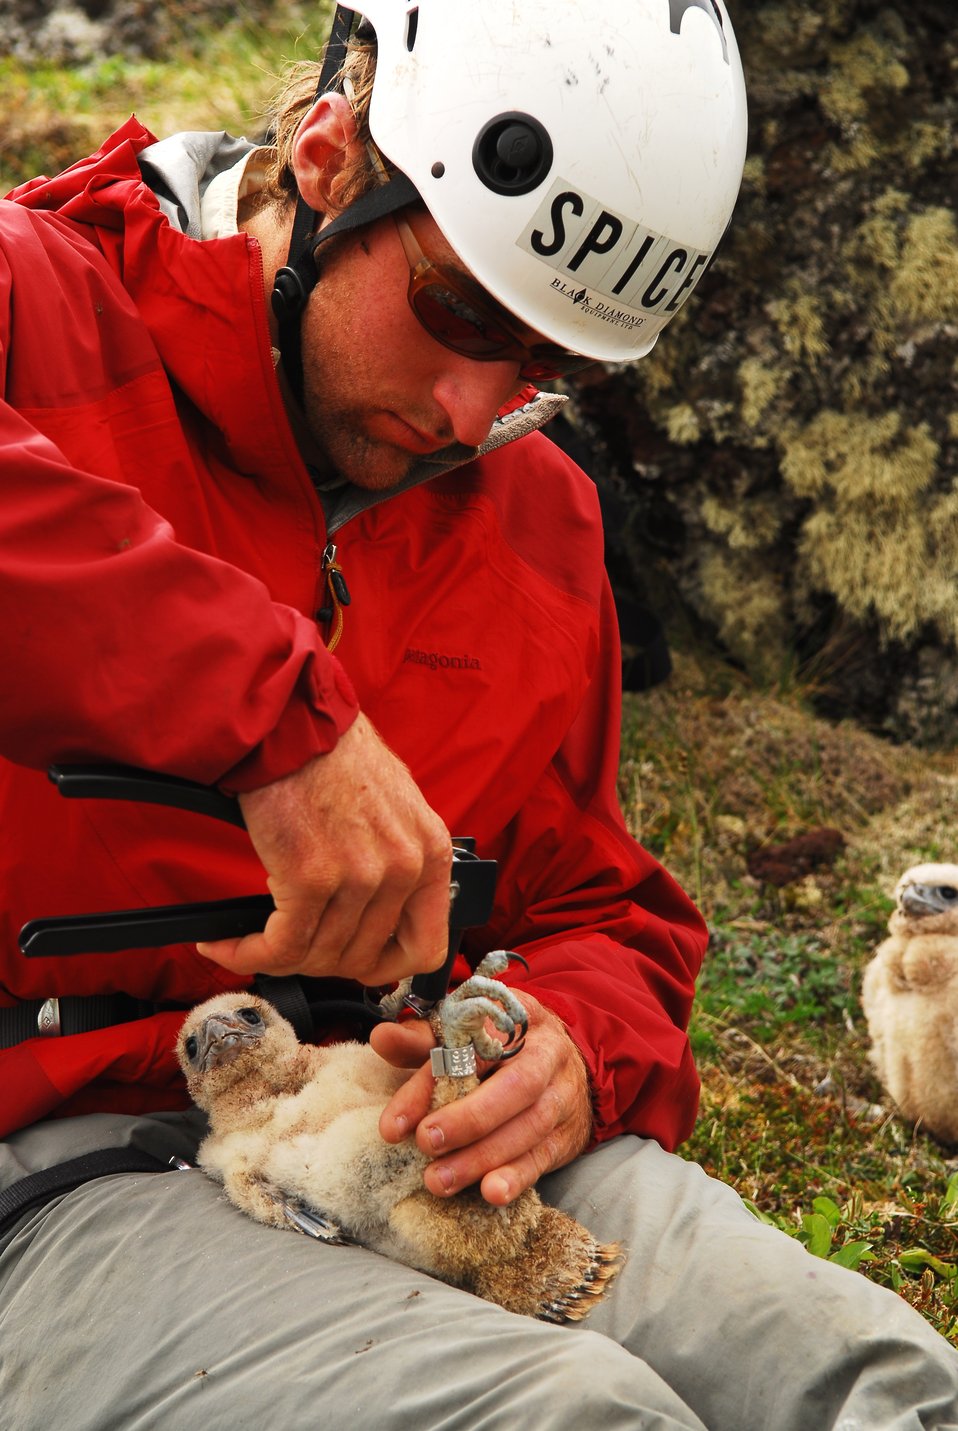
Banding a Gyrfalcon nestling

In 2004 a multi-year research project was initiated investigating Gyrfalcons within the YDNWR.
Researchers banded and collected genetic samples from each nestling that was encountered.

USFWS Yukon Delta NWR